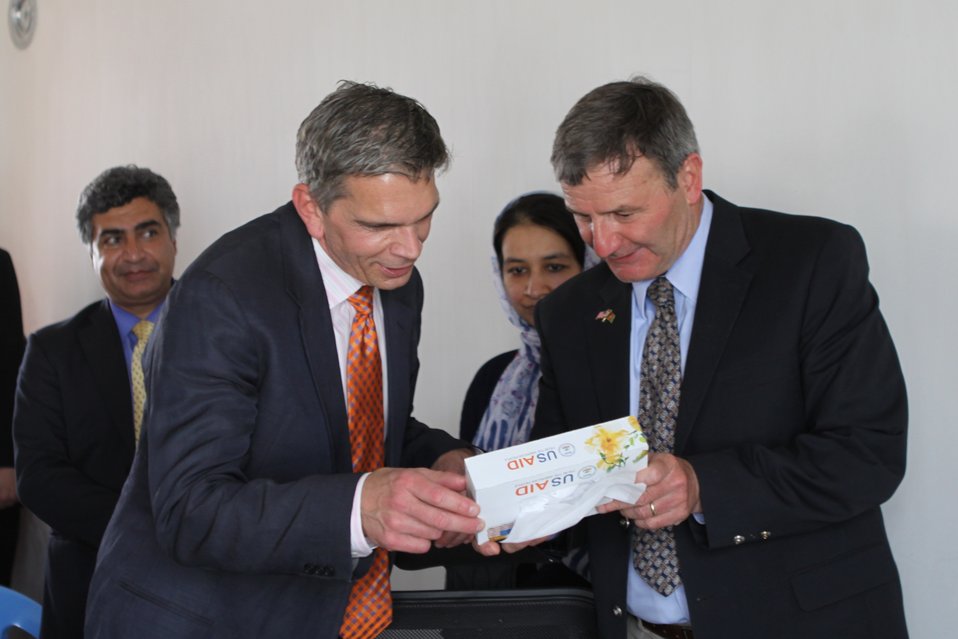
100525 Hirat Marble Conference 843